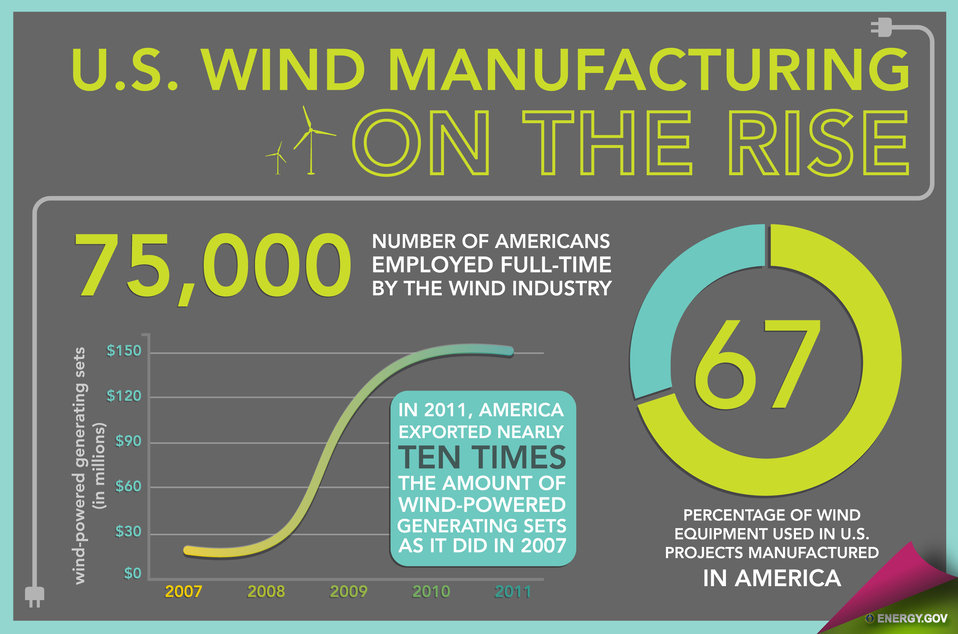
Wind Energy in America - Slide 2